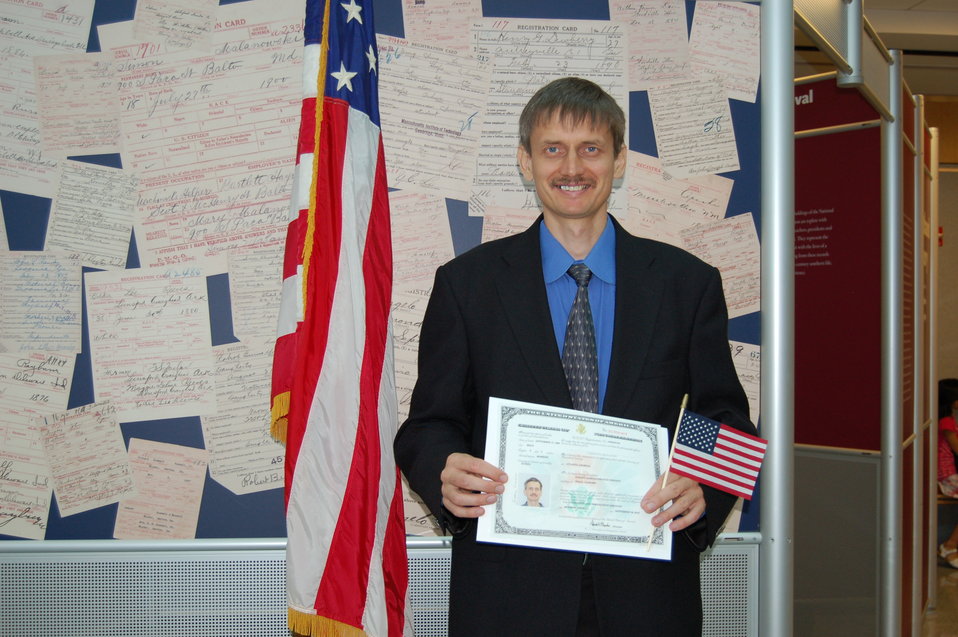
New Citizens